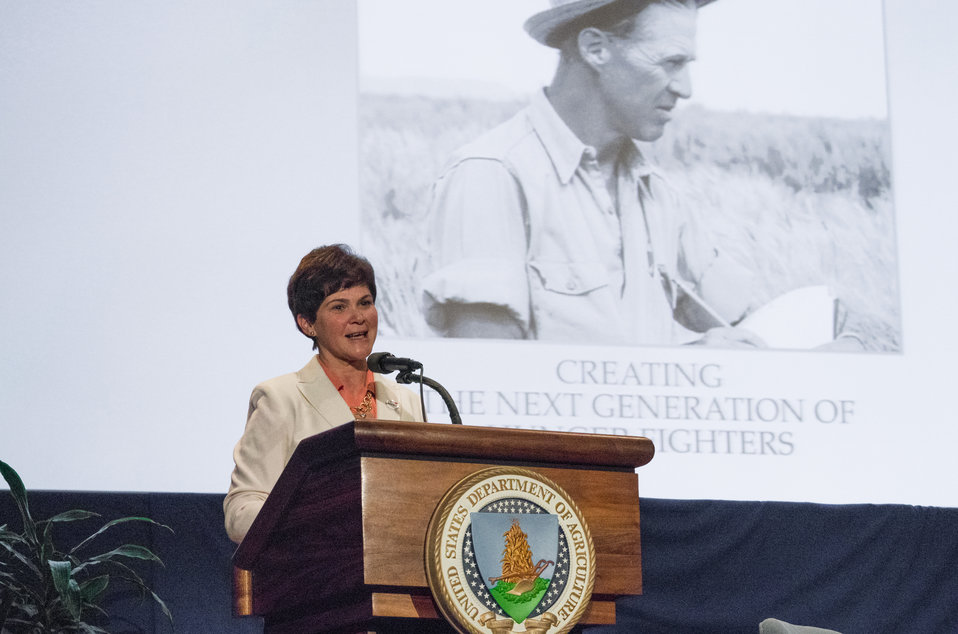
Agriculture Deputy Secretary Krysta Harden is the keynote speaker for the Borlaug Symposium commemorating the late Dr. Norman Borlaug's 100th Birthday in the Jefferson Auditorium of the U.S. Department of Agriculture (USDA) in Washington, D.C. on Tuesday, Mar. 25, 2014. The symposium highlights current efforts addressing global hunger. The symposium panels will feature high school and university students, as well as, scientists and policy advisors at USAID, USDA and NGOs. Questions from students and interns are given priority to panelists. Lightening presentations will have leading students and individuals present what they are doing to help achieve Dr. Borlaug’s vision of creating the next generation of hunger fighters. The symposium was planned in partnership with: U.S. Agency for International Development, Cornell University, Iowa State University, University of Minnesota, The Norman Borlaug Institute for International Agriculture, Texas A and M University, and the World Food Prize.